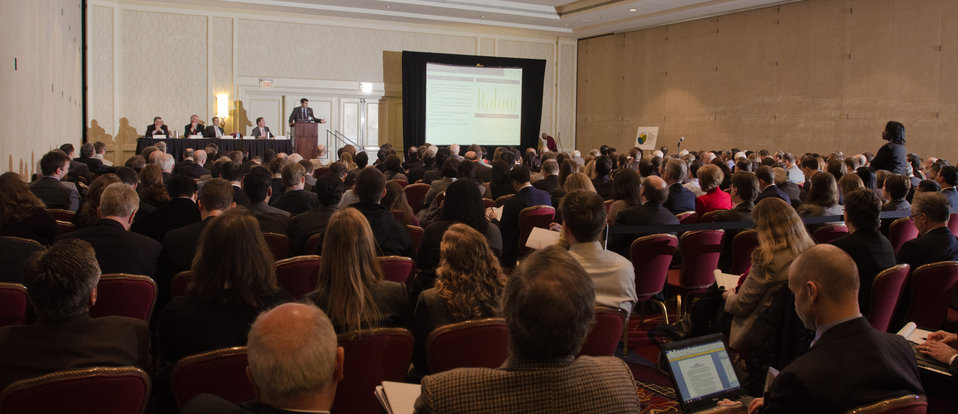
Seneri Kernbeis Paludo spoke about ”Domestic Consumption’s Impact on Export Potential in Brazil” during the Food Prices & Farm Income session on “Export Opportunities and Competition in Brazil, Russia, India, and China (BRIC) Countries,” during the 2012 Agricultural Outlook Forum, “Moving Agriculture Forward, Growing, Innovating and Celebrating 150 Years” held at the Crystal Gateway Marriott Hotel in Arlington, Virginia, on Thursday, February 23, 2012. This year’s forum coincides with the 150th anniversary of the Department of Agriculture addressing economics, marketing, research, food safety, nutrition, conservation, rural development, alternative energy, trade and many other agricultural issues.